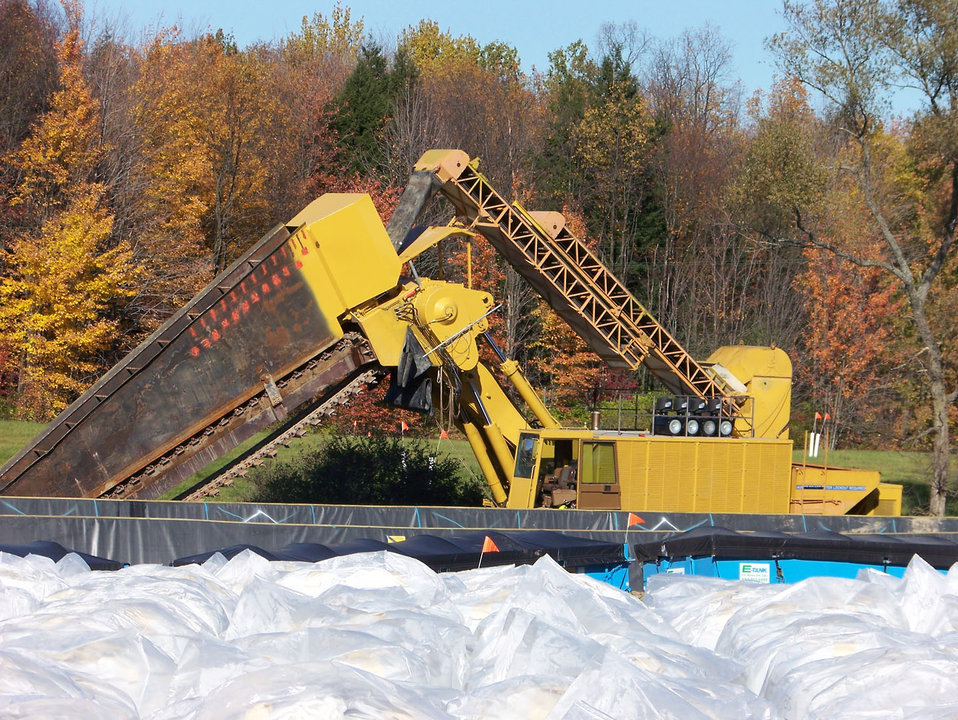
Plume Mitigation Project Breaks Ground at West Valley

A 200,000-pound one-pass trencher broke ground (2010) at the West Valley Demonstration Project in Western New York. Thanks to an infusion of funds from the American Recovery and Reinvestment Act (ARRA), the trencher is placing a Permeable Treatment Wall (PTW) on the northern portion of the site to slow the spread of a groundwater plume contaminated with Strontium-90 (Sr-90). The plume originated from a leak in a pipe in the facility used for reprocessing spent nuclear fuel during commercial operations in the 1960s.